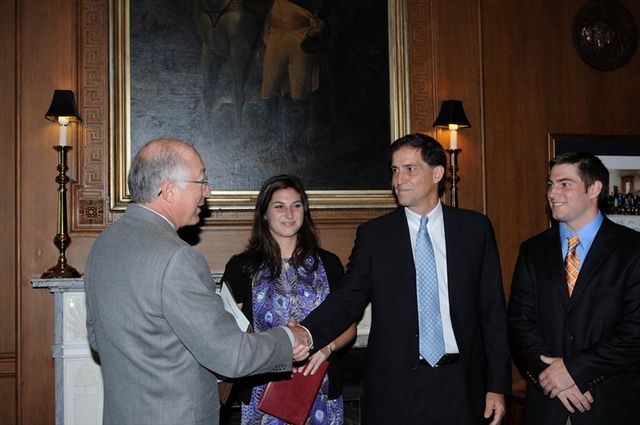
Dan Ashe Confirmed as 16th Director of U.S. Fish and Wildlife Service

Secretary Salazar shakes hands with new USFWS director, Dan Ashe.